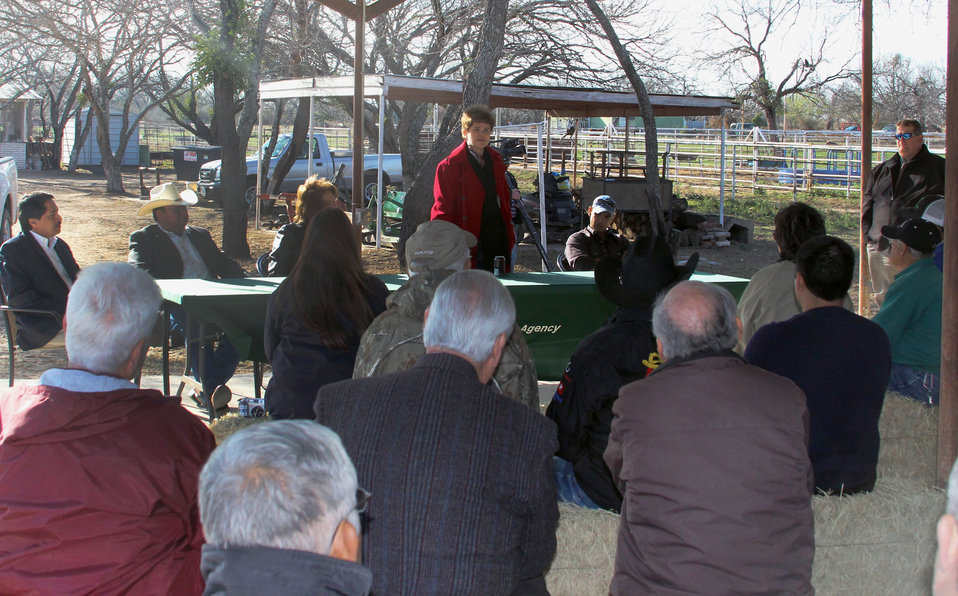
U.S. Department of Agriculture (USDA) Texas agency leaders, including Rural Development (RD) Daniel Torres, Texas State Conservationist, Natural Resources Conservation Service (NRCS) Salvador Salinas, and Texas State Executive Director Judith Canales join Agriculture Deputy Secretary Krysta Harden as they visit with South Texas farmers and ranchers about Strikeforce at Miguel Ruiz’s ranch in Lytle, TX on Thursday, Feb. 27, 2014.